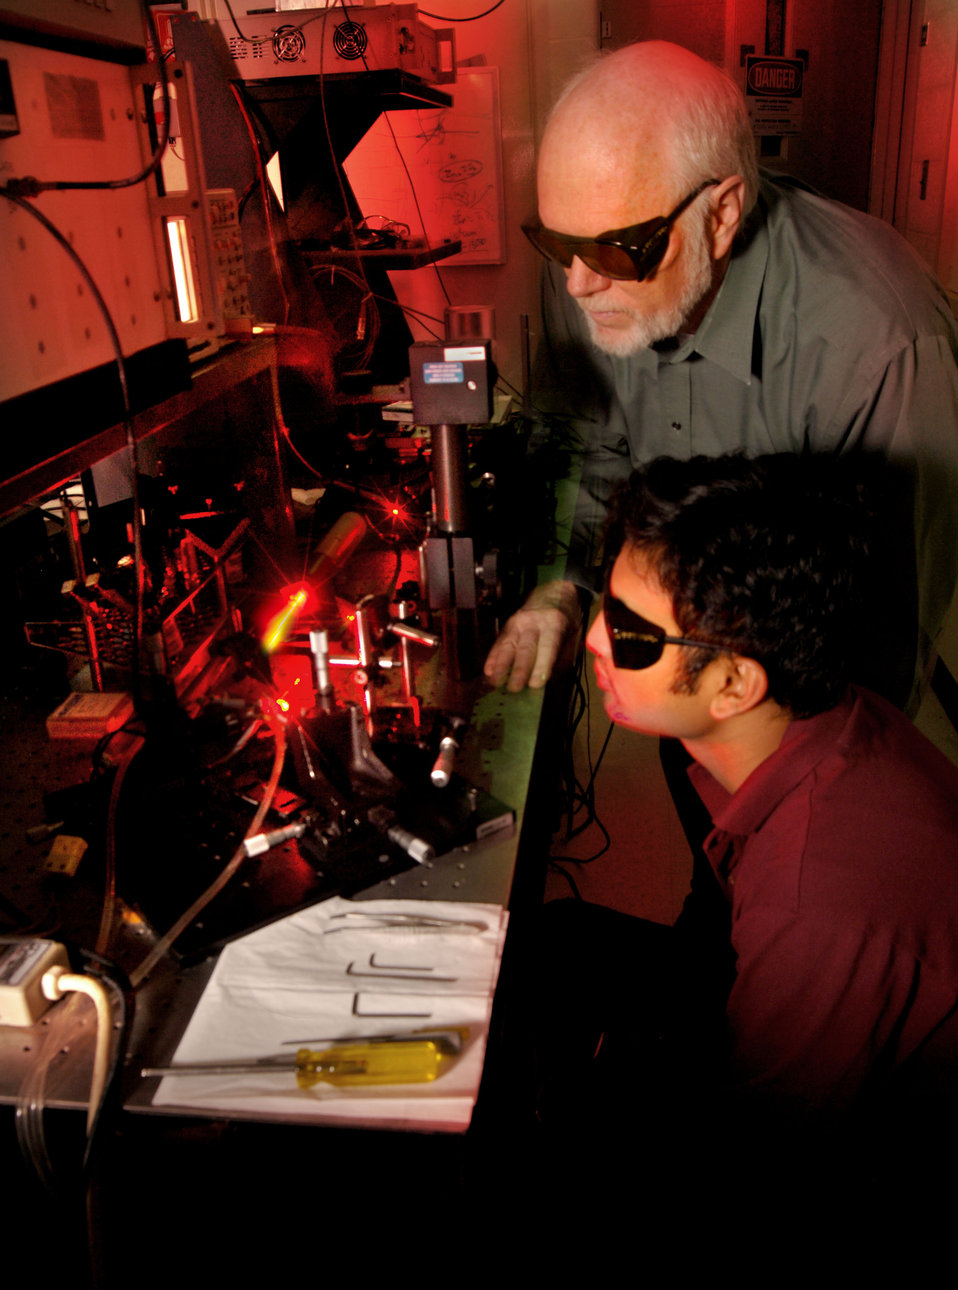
Narasimha Rao Ayyalasomayajula (foreground), a West Virginia University Ph.D. student working as a research associate at the Department of Energy's National Energy Technology Laboratory, and NETL researcher Steve Woodruff work on a diode pumped Nd: YAG laser invests at NETL. Researchers are developing a laser laboratory on a chip as a new type of optical sensor.